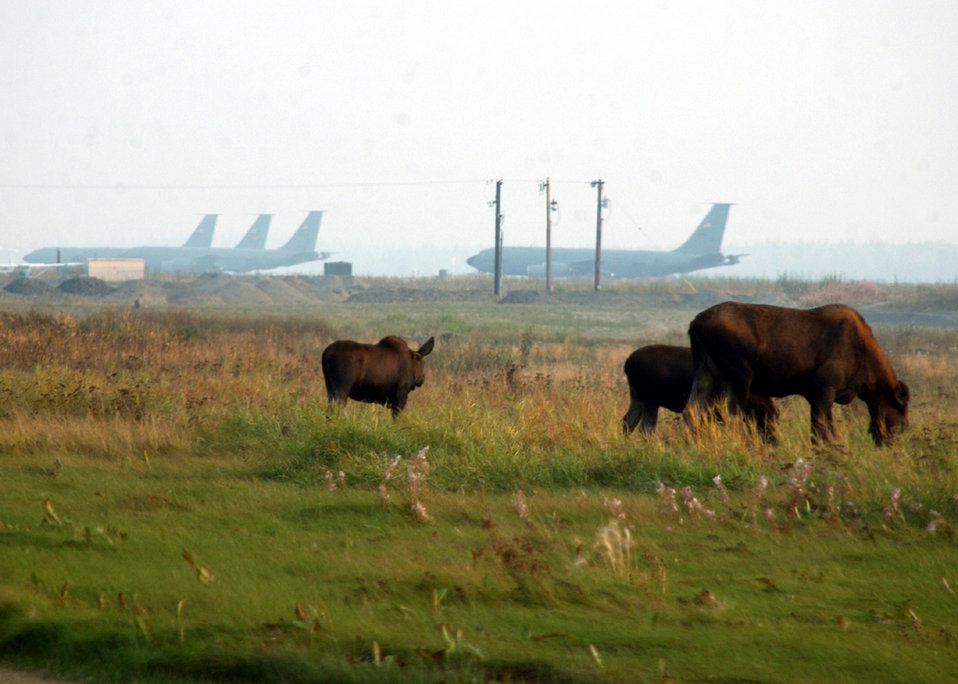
Moose on the loose

EIELSON AIR FORCE BASE, Alaska -- A moose and her two calves graze near the flightline here in front of KC-135 Stratotankers on Sept. 11. Moose are a common site here and throughout Alaska. The aircraft belong to the Alaska Air National Guard's 168th Air Refueling Wing.